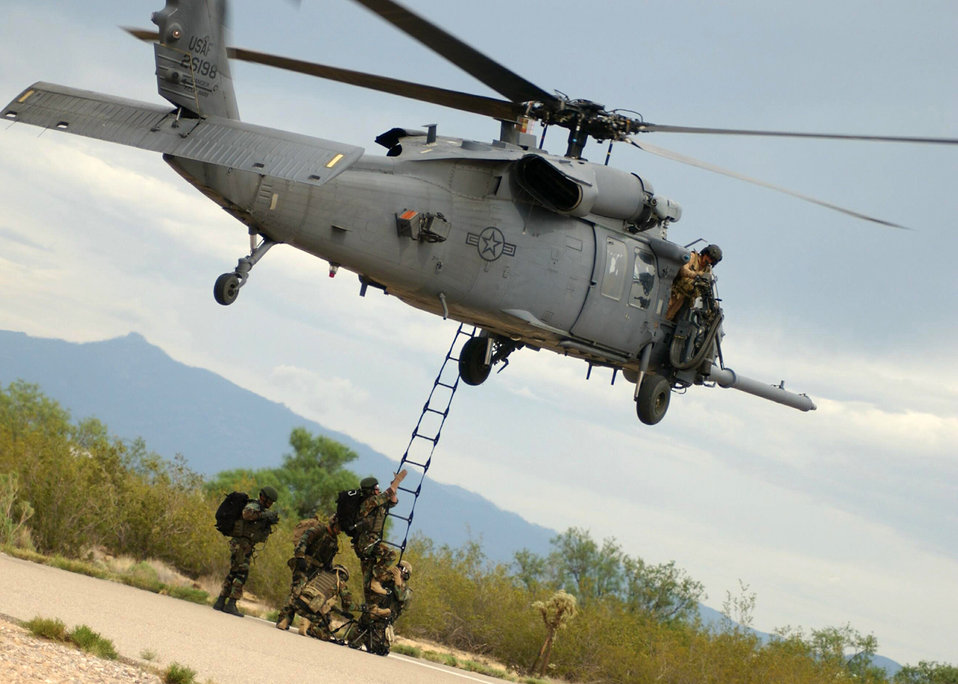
Rescue me!

DAVIS-MONTHAN AIR FORCE BASE, Ariz. -- Pararescuemen from the 48th Rescue Squadron climb up a rope ladder into an HH-60 Pave Hawk during training here Aug. 16.